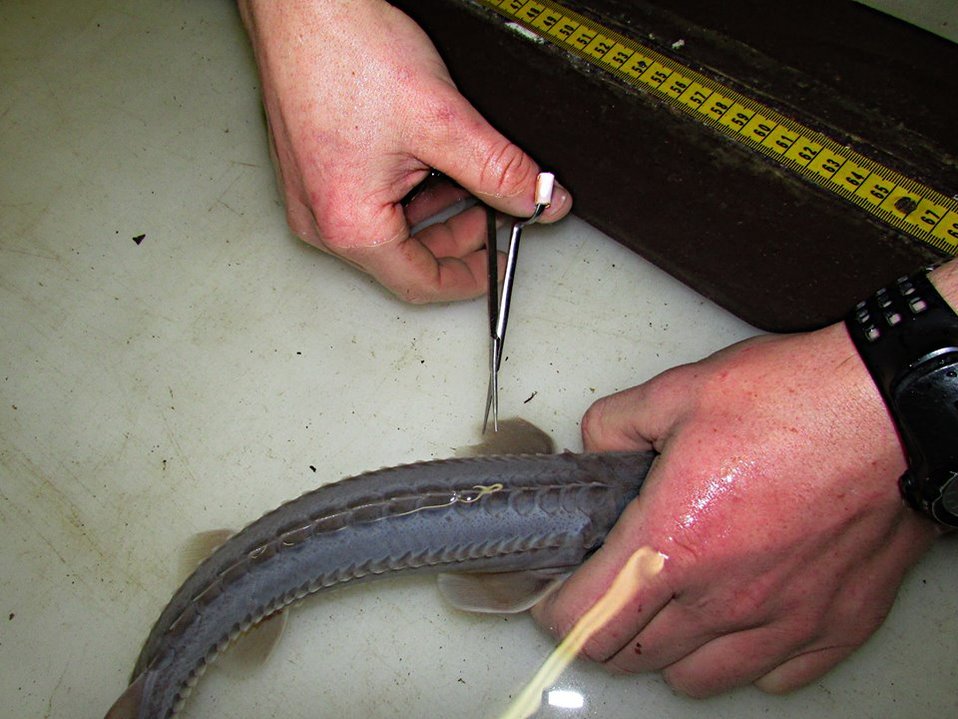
Genetics

In December we took fin clips on our 2012 year class pallid sturgeon. The fin clips will be sent to the Northeast Fishery Centery in Pennsylvania where they will be examined to determine the genetics of each fish.